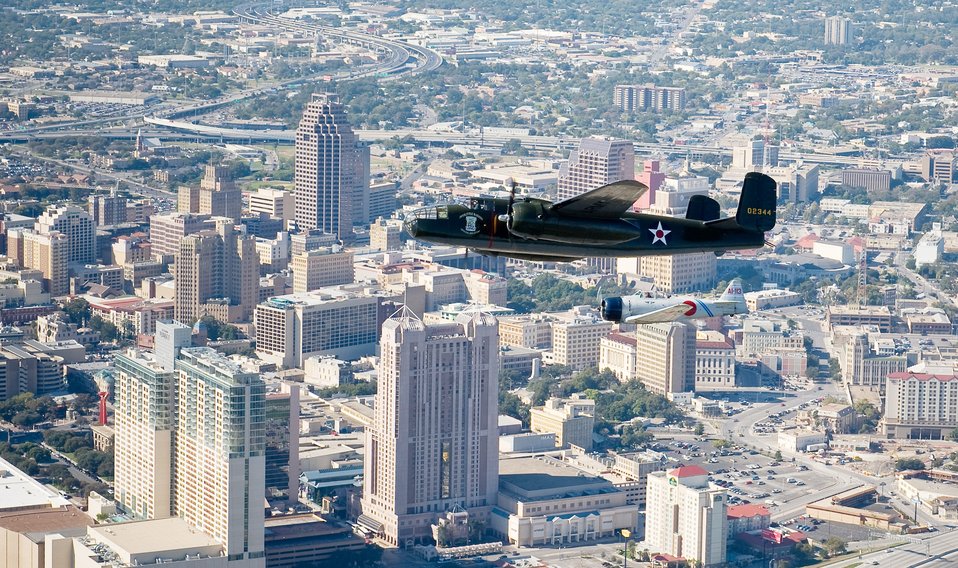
Friends now